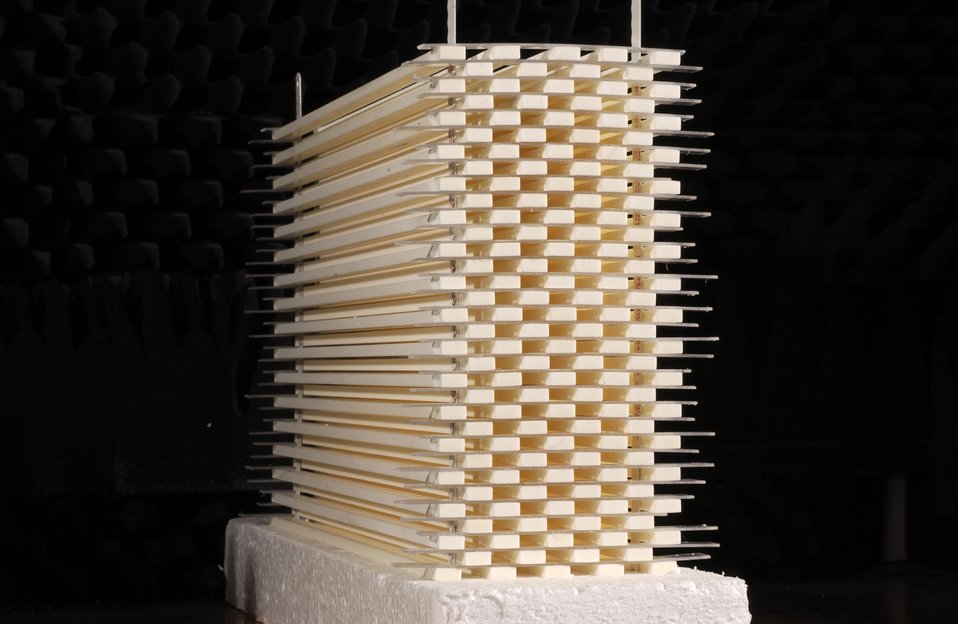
PHOTONIC CRYSTAL DESIGNED AND CONSTRUCTED TO DEMONSTRATE NEGATIVE REFRACTION.

PHOTONIC CRYSTALS WERE CONSTRUCTED BY AMES PHYSICISTS IN ORDER TO DEMONSTRATE NEGATIVE REFRACTION AND SUPERLENSING IN THE MICROWAVE REGION OF THE ELECTROMAGNETIC SPECTRUM. SCIENTISTS BELIEVE THAT EXPERIMENTS WITH THESE MATERIALS MAY LEAD TO THE DEVELOPMENT OF A TYPE OF FLAT SUPERLENS THAT OPERATES IN THE VISIBLE SPECTRUM, WHICH WOULD OFFER SUPERIOR RESOLUTION CAPTURING DETAIL MUCH SMALLER WHICH WOULD VASTLY IMPROVE IMAGING FOR BIOMEDICAL AND MATERIALS APPLICATIONS.